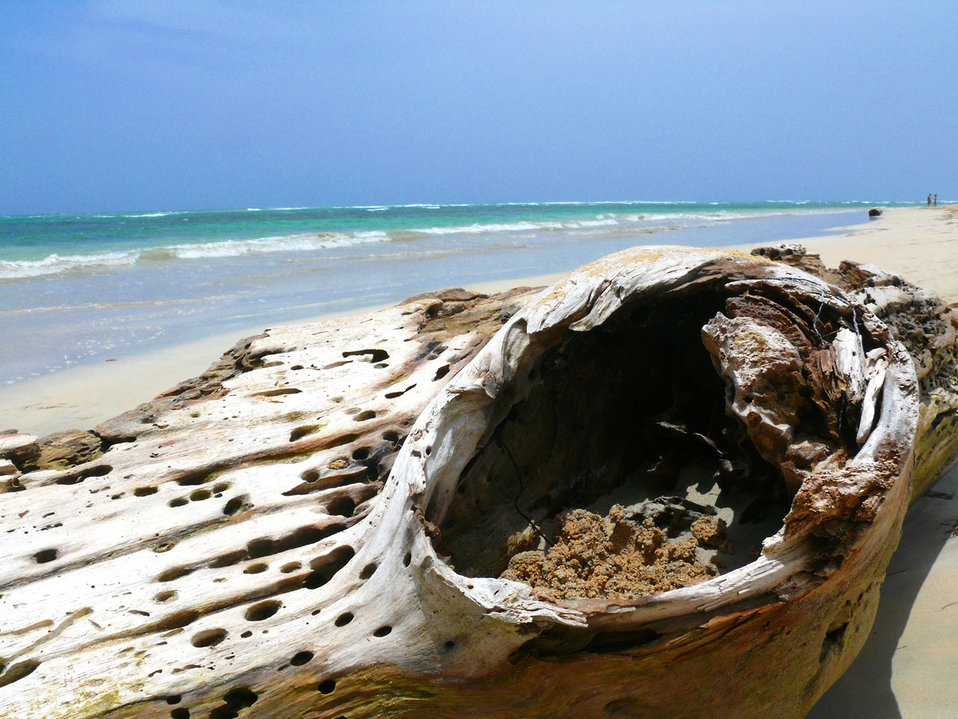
Wood on the beach.